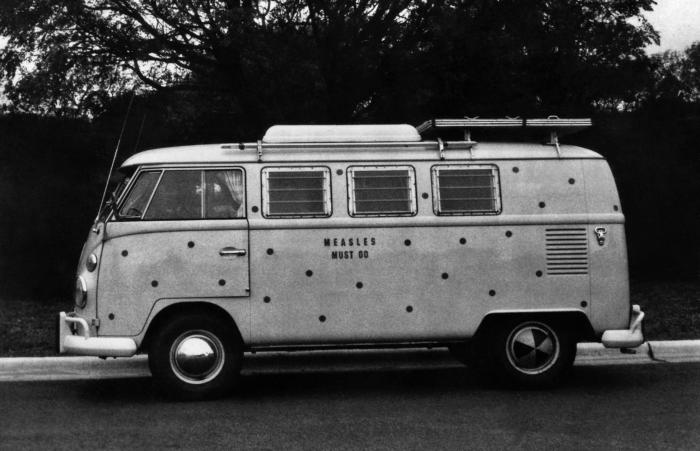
This photograph showed a spotted vaccine delivery vehicle, which displayed the message, 'MEASLES MUST GO', on its side.